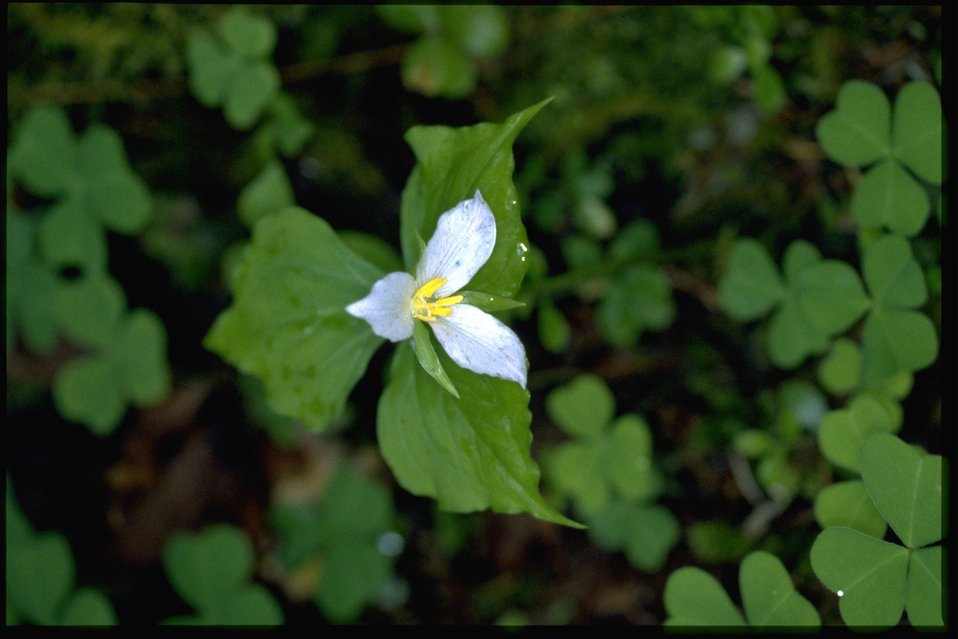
Medium shot of Trillium ovatum.